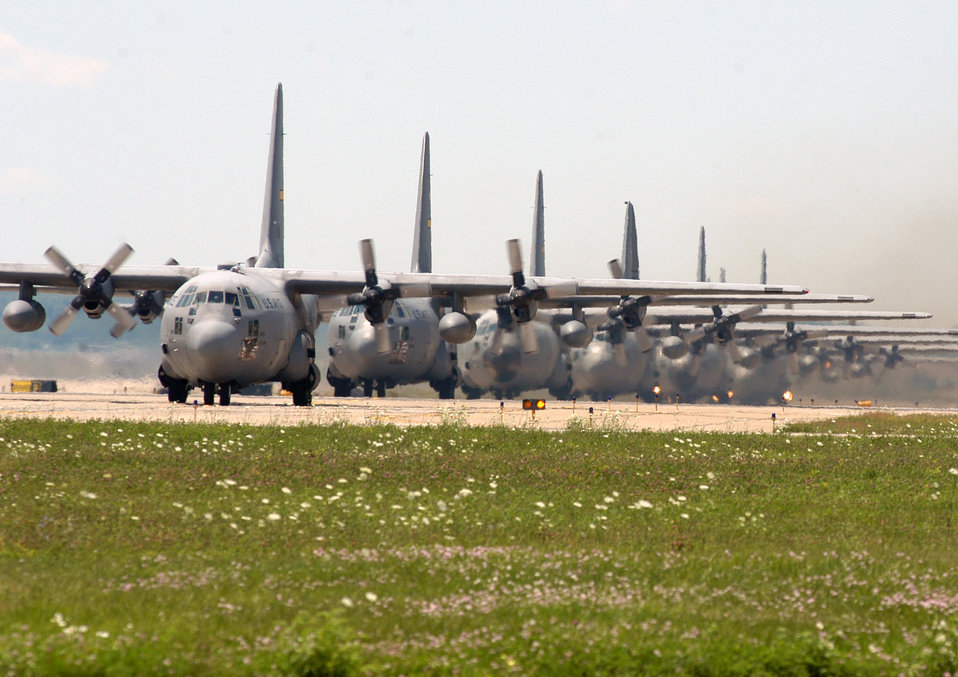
Excercise Bold Effort tests C-130 re-supply capabilities

Eight C-130 Hercules aircraft from the Air Force Reserve Command's 911th Airlift Wing return home to Pittsburgh Air Reserve Station, Pa., after participating in Exercise Bold Effort July 14. The purpose of this training exercise was to maintain unit proficiency in re-supplying ground forces during combat operations.